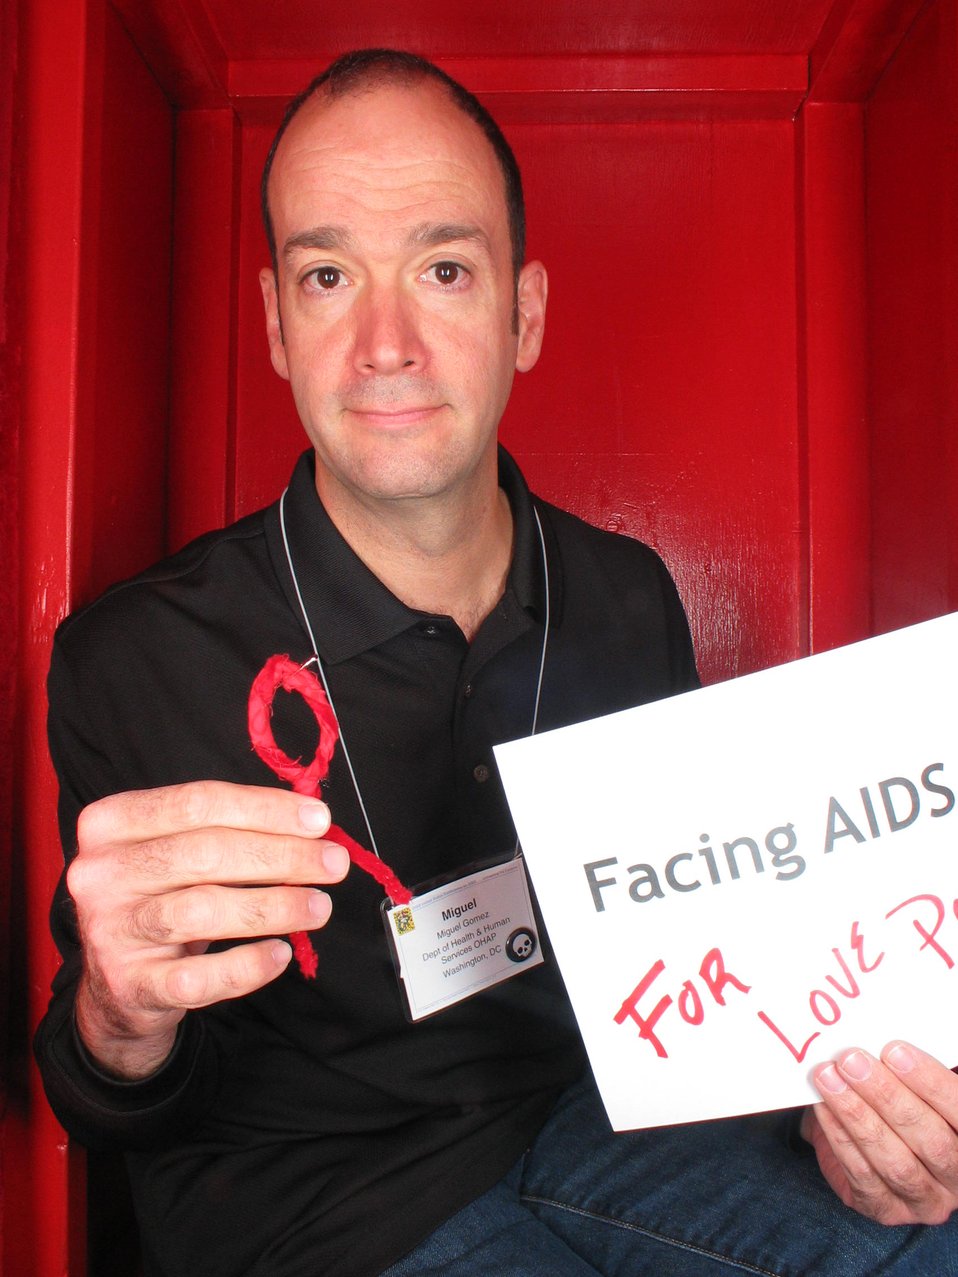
Facing AIDS for love